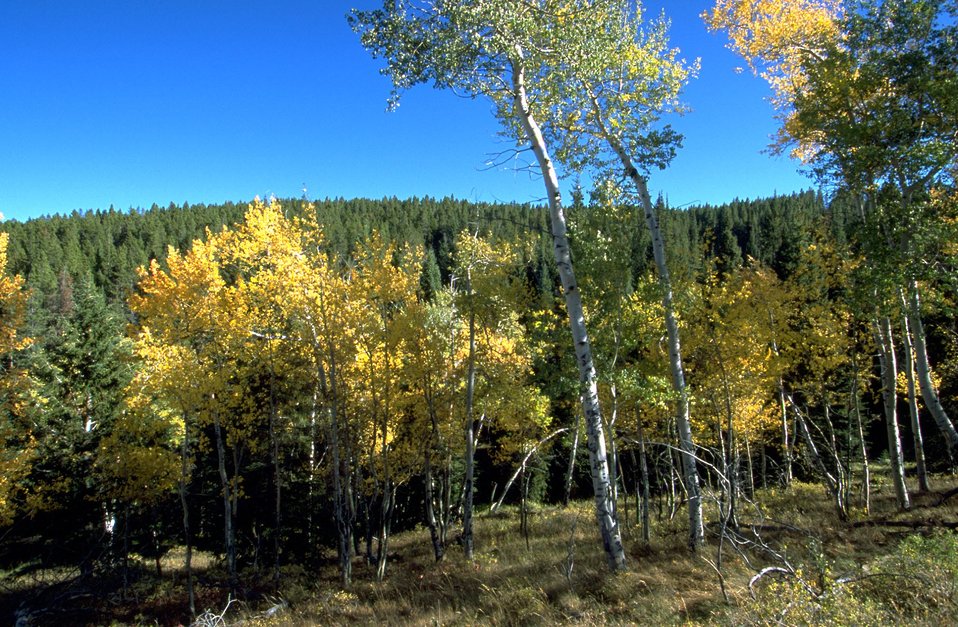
Aspen turning to autumn colors